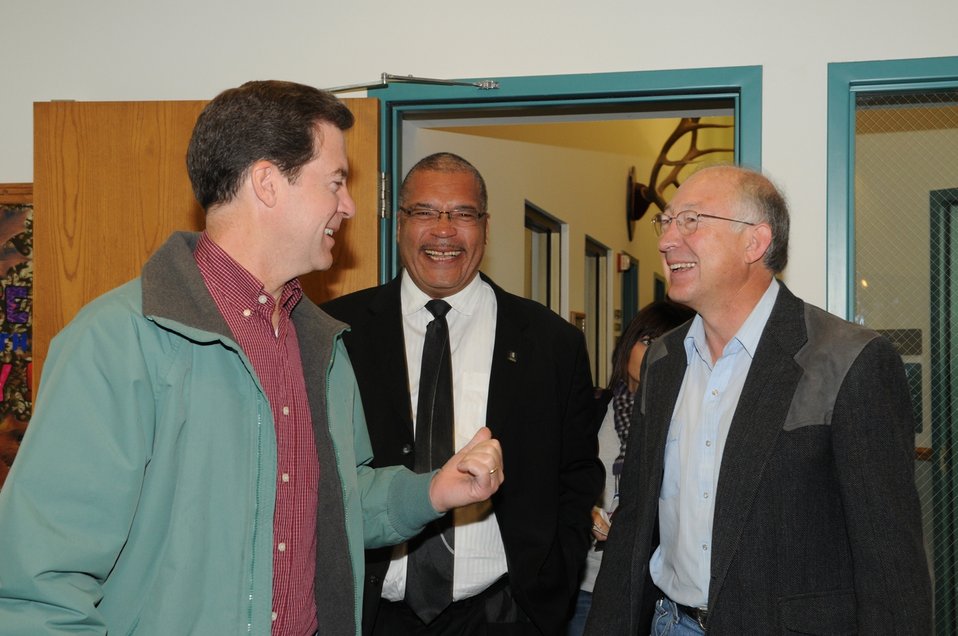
The Conservation Principals Meeting

Governor-elect Sam Brownbeck, Mayor Carl Brewer, and Secretary of the Interior Ken Salazar.